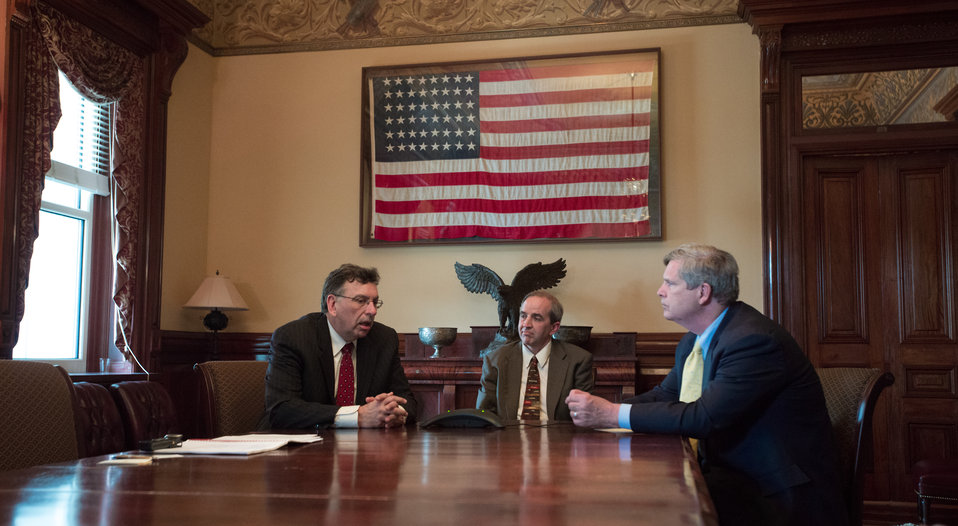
(L to R) Spruce Haven Farm and Research Center General Partner Doug Young, Innovation Center for U.S. Dairy Chief Executive Office (CEO) Tom Gallagher, and Agriculture Secretary Tom Vilsack respond to questions from the news media, during a teleconference call after the signing of a Memorandum of Understanding (MOU) at the Innovation Center For U.S. Dairy Sustainability Council Meeting, on Wednesday, Apr. 24, 2013, at the White House in Washington, D.C. The teleconference took place in the historic Secretary of War suite, at the White House, in Washington, D.C. The objectives of the MOU are to increase the construction of anaerobic digesters and explore innovative ways to use products previously considered waste streams from dairy production, processing and handling.